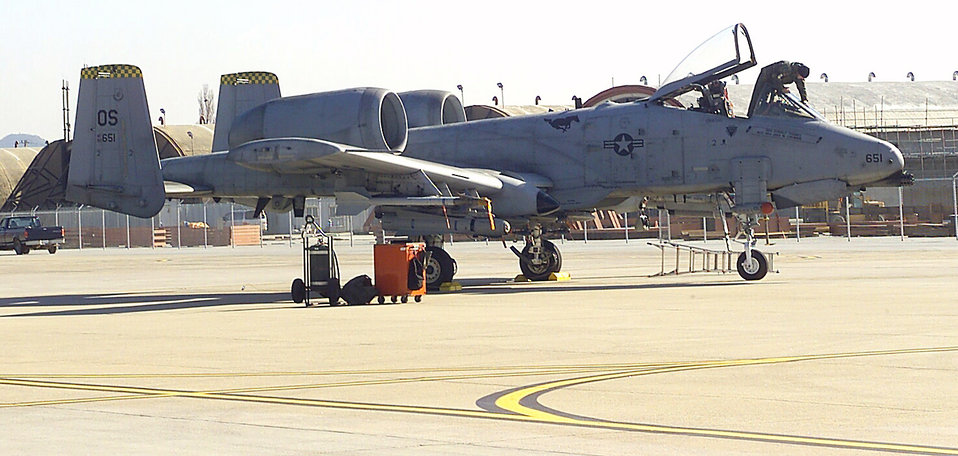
Super inspector

OSAN AIR BASE, South Korea -- Tech. Sgt. Chris R. Marshel performs an end of runway inspection on an A-10 Thunderbolt II here March 2. Tech Sgt. Marshel is an end of runway supervisor with the 51st Aircraft Maintenance Squadron.